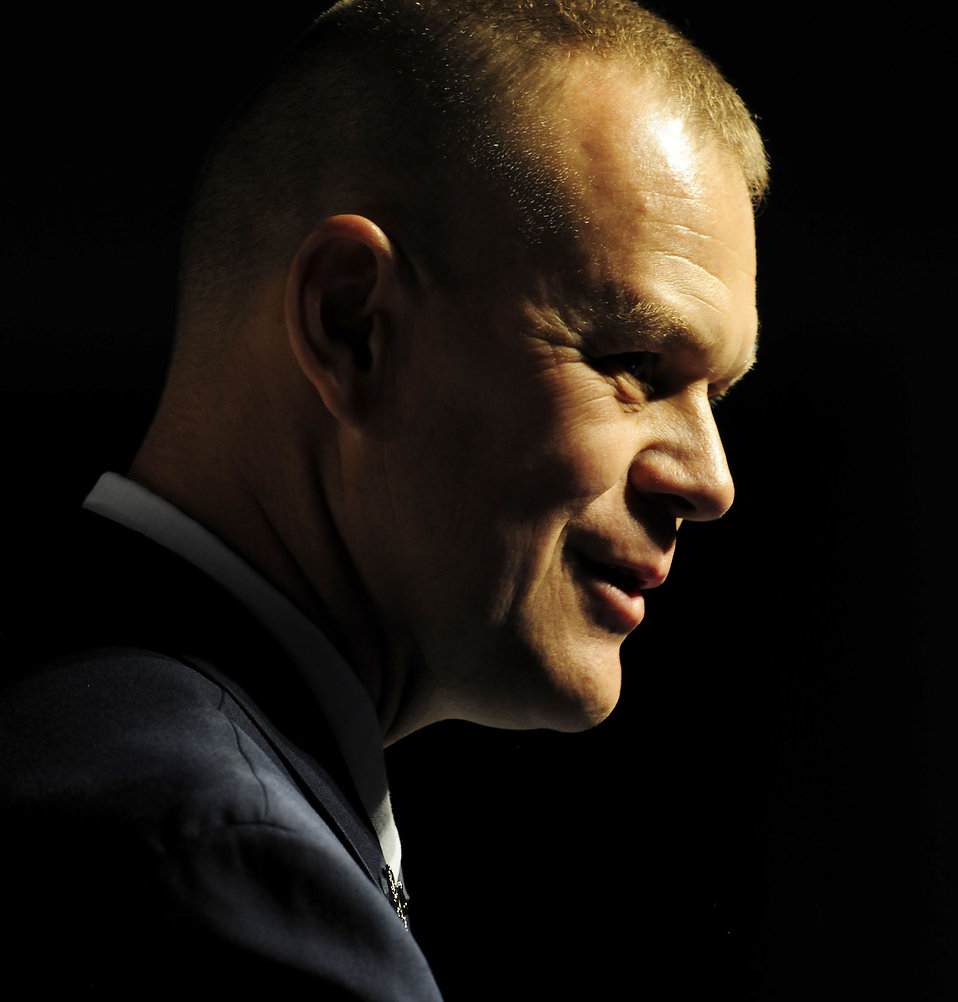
Chief Roy at the AFA convention

Chief Master Sgt. of the Air Force James Roy addresses attendees of the Air Force Association Air and Space Conference and Technology Exposition, Sept. 15, 2010, at National Harbor in Oxon Hill, Md. He stated he believes in building resiliency in Airmen and their families.